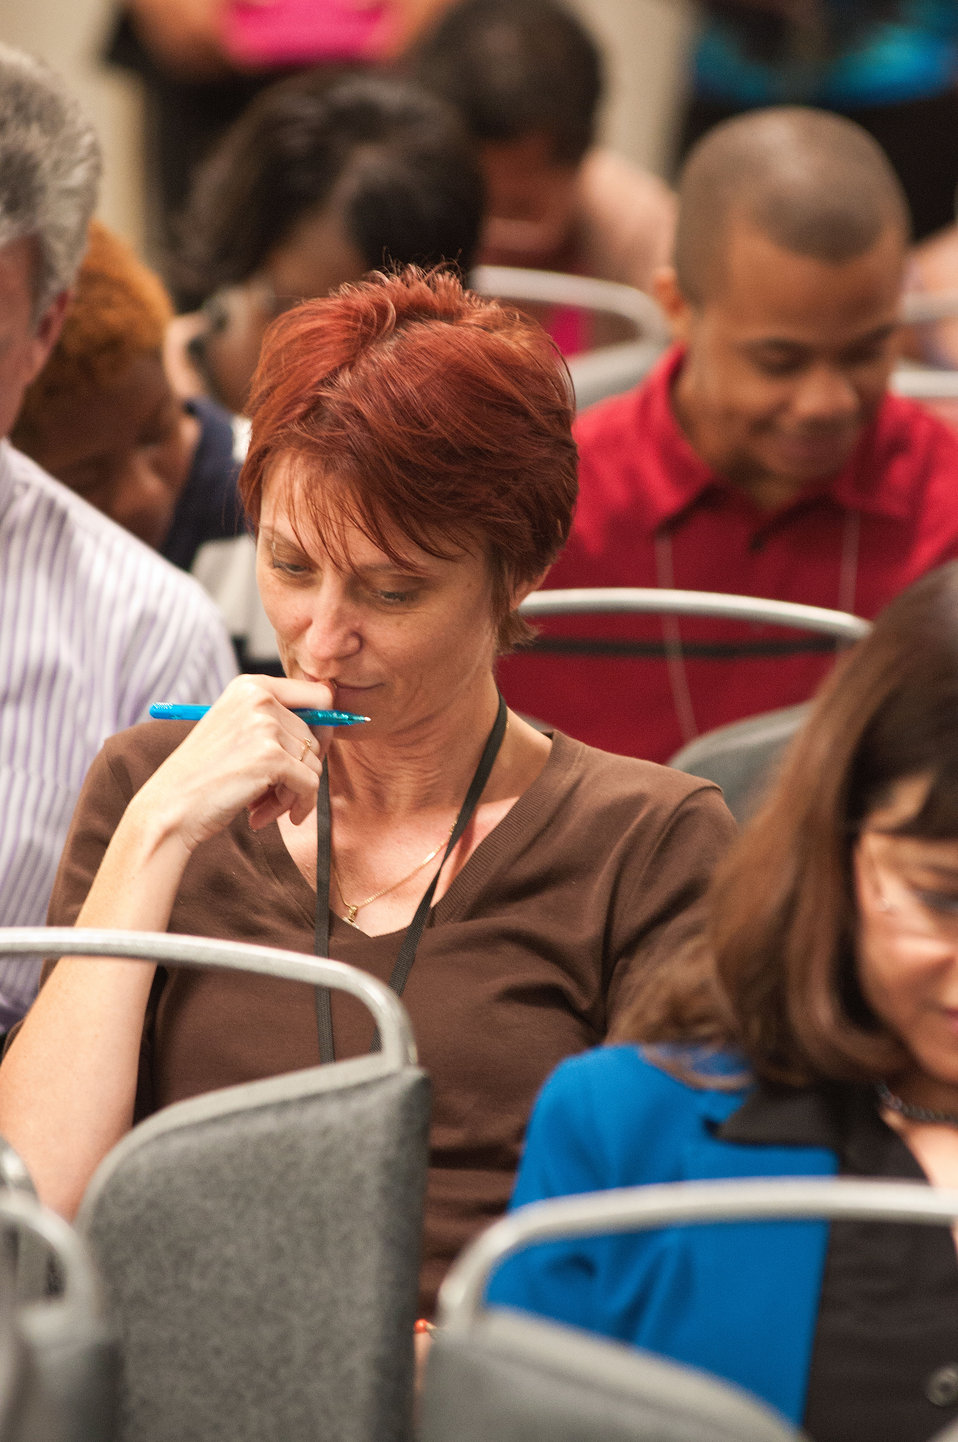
United States Department of Agriculture Rural Development employees answer questionnaires associated with tele-work procedures during one of many forums held for the Rural Development Cultural Transformation Day event held in Washington, D.C. on Thursday, July 12, 2012.